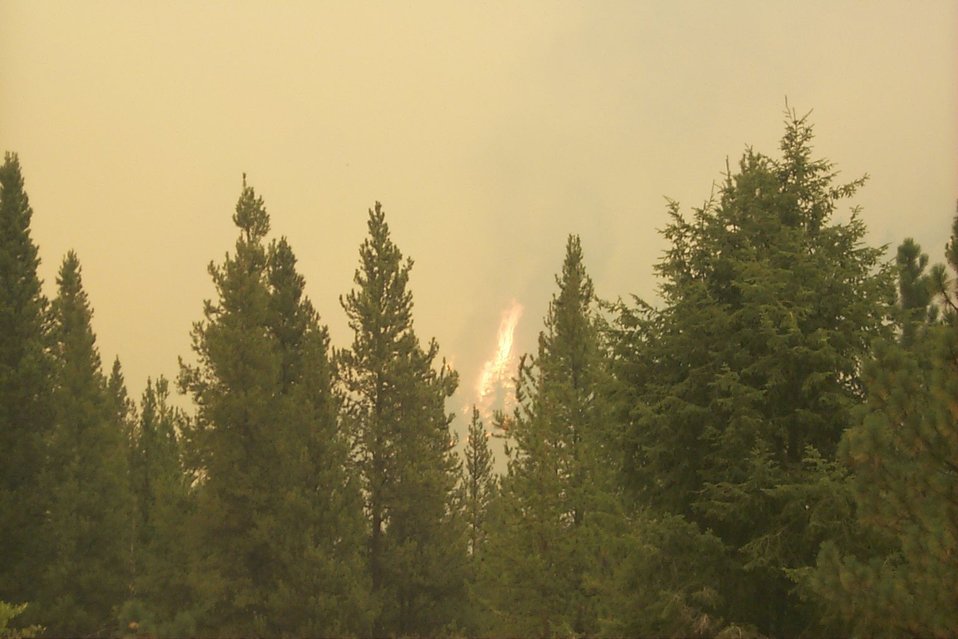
Fire Clearwater Fire Salmon Field Office USRD Upper Snake River District